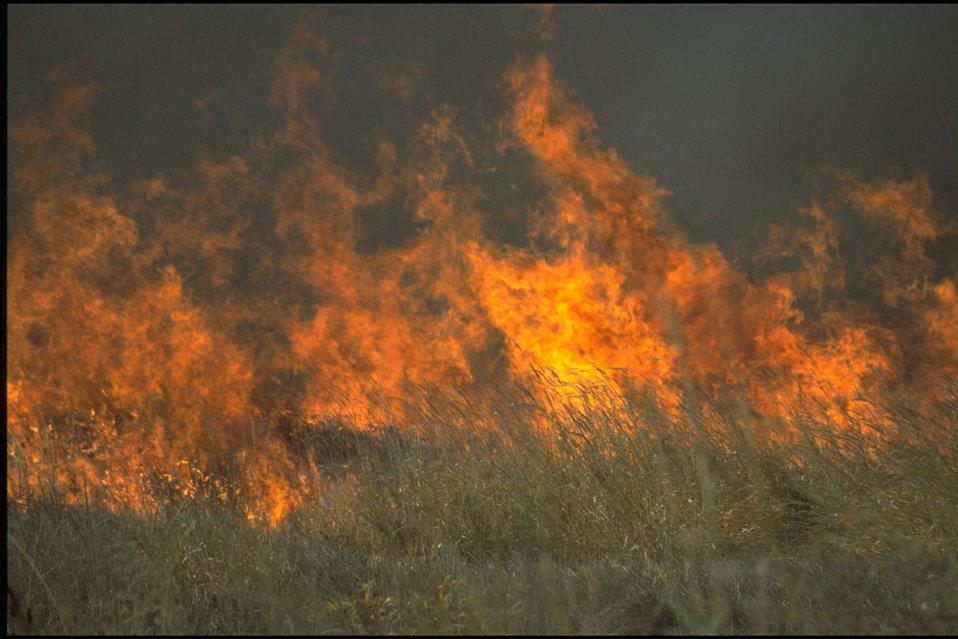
Turtle-Swale Wetland Burn.